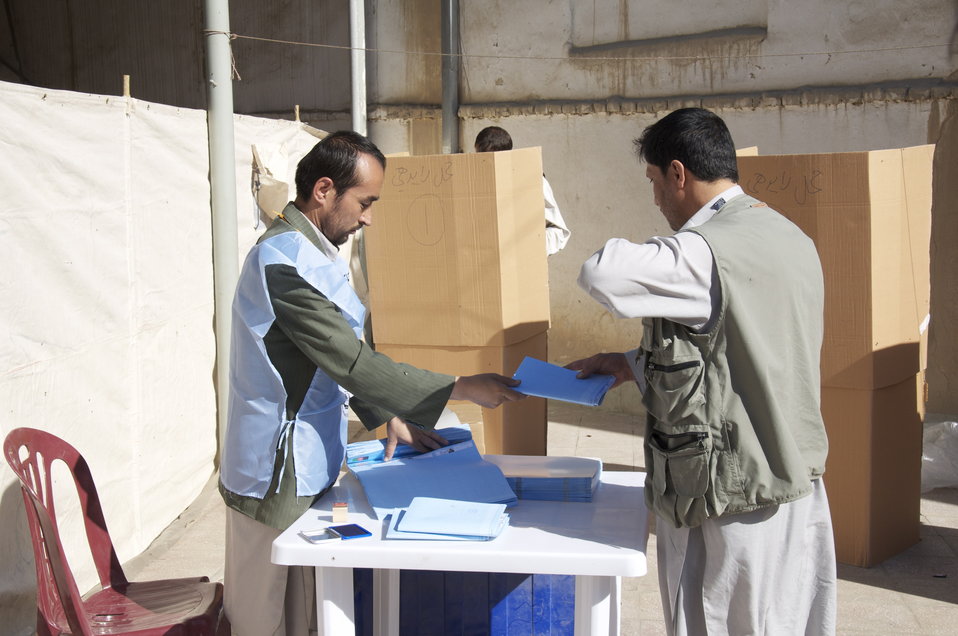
Voting